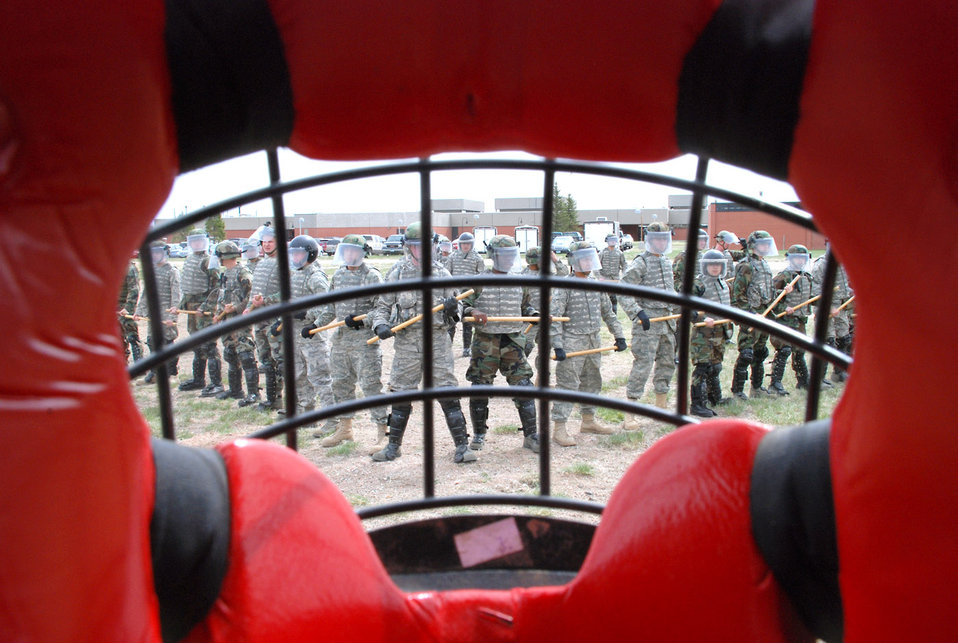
Keep your distance

Security forces Airmen form a wedge during confrontation training April 28 at F.E. Warren Air Force Base, Wyo. As seen through the camera, the